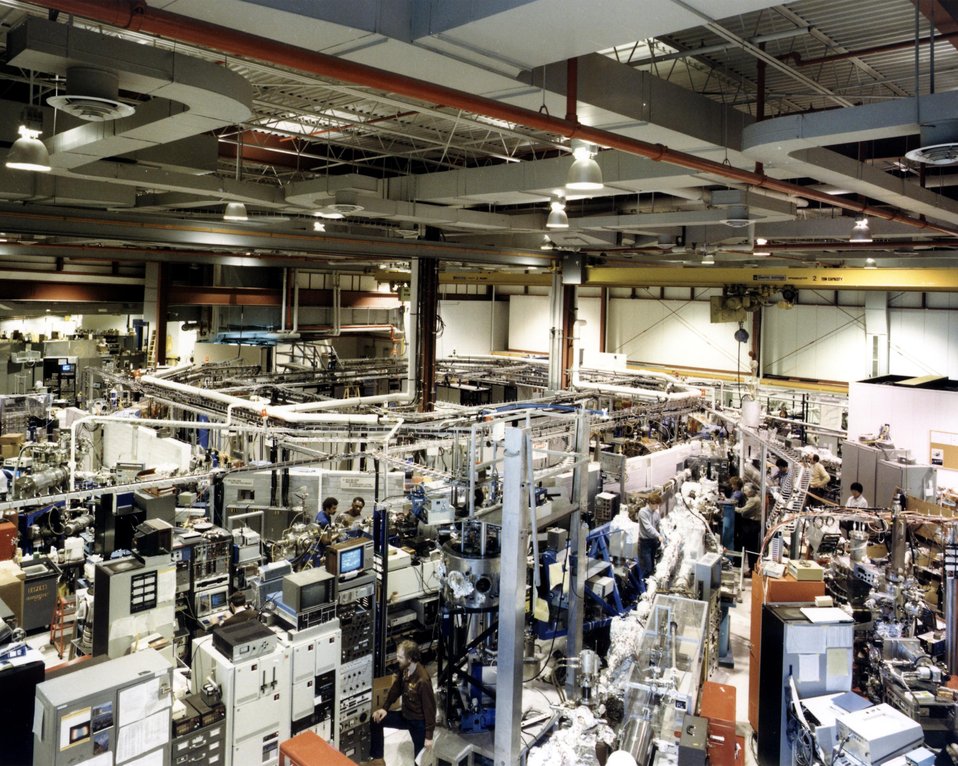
THE EXPERIMENTAL FLOOR OF THE ULTRAVIOLET RING.

THE NSLS WILL ACCELERATE AND STORE ELECTRONS AT A SPEED CLOSE TO THAT OF LIGHT TO PRODUCE AN ENTIRE SPECTRUM OF RADIATION, FROM INFRARED THROUGH X-RAYS, FOR UNIQUE APPLICATIONS IN MANY FIELDS OF SCIENCE. THE FACILITY WILL CONSIST OF TWO ELECTRON STORAGE RINGS. THE SMALLER RING WILL ACCELERATE ELECTRONS TO 700 MILLION ELECTRON VOLTS TO PRODUCE ULTRAVIOLET RADIATION, AND THE LARGER RING WILL ACCELERATE ELECTRONS TO 2500 MILLION ELECTRON VOLTS TO PRODUCE X-RAYS. THE ULTRAVIOLET LIGHT CAN BE USED TO STUDY: CHEMICAL REACTIONS AND STRUCTURES, THE PROPERTIES OF PURE METALS, ALLOYS, AND INSULATING MATERIALS, AND THE TRANSFER OF ENERGY IN BIOLOGICAL SYSTEMS. X-RAY LITHOGRAPHY MAY BE USED BY THE ELECTRICAL INDUSTRY IN THE PRODUCTION OF MICROSCOPIC PRINTED CIRCUITS FOR COMPUTERS AND MICROPROCESSORS. X-RAY MICROSCOPY COMPLEMENTS ELECTRON MICROSCOPY, PERMITTING OPERATIONS THAT WOULD BE IMPOSSIBLE WITH AN ELECTRON MICROSCOPE.